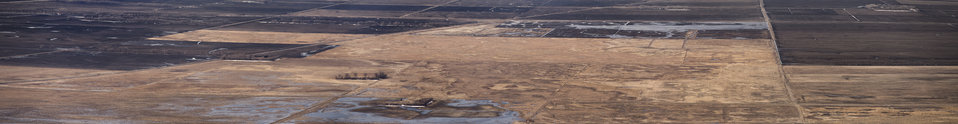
(Virtual panorama) Ehlert U.S. Department of Agriculture (USDA) Natural Resources Conservation Service (NRCS) Wetland Reserve Program (WRP) in Wilkin County, MN, on Tuesday, April 30, 2013. For information about this and other programs from the USDA Red River Basin Initiative (RRBI) please see www.mn.nrcs.usda.gov/news/features13/RRBI.html. USDA Photo Illustration by Lance Cheung.“Red River Basin” “Red River” Minnesota MN “North Dakota” ND “South Dakota” SD prairie wetlands flooding water retention land wildlife habitat flat “flat farm” glacial lake plains and valleys to hilly beach ridges provide conservation challenges and the need for a “Red River Basin Initiative” migratory wildlife “United States Department of Agriculture” USDA “Natural Resources Conservation Service” NRCS agricultural farm floodwater water “water flow” floodplain “Public Law PL83-566 Small Watershed Program” PL566 “Wetland Reserve Program” WRP panorama